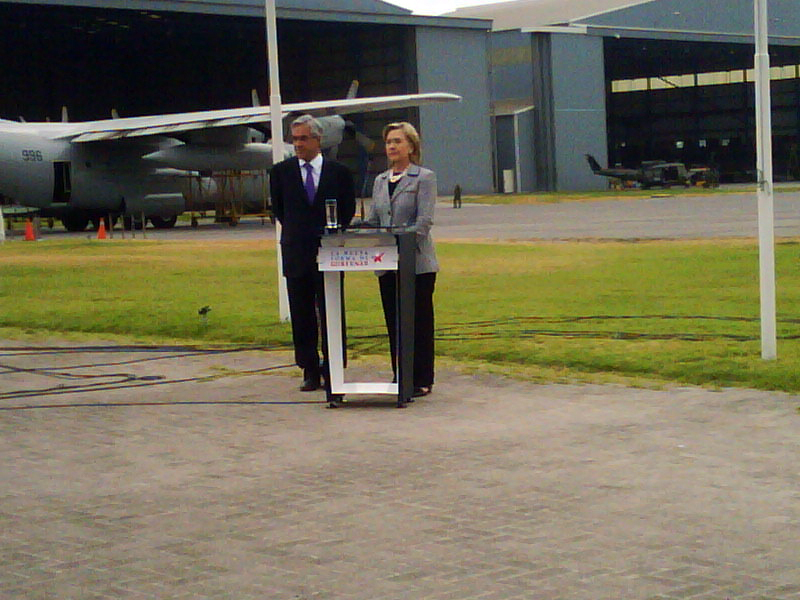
Secretary Clinton Meets With Chilean President-Elect Piñera

U.S. Secretary of State Hillary Rodham Clinton and Chilean President-elect Sebastian Piñera speak to the press in Santiago, Chile March 2, 2010. [State Department photo / Public Domain] #hillarytravel